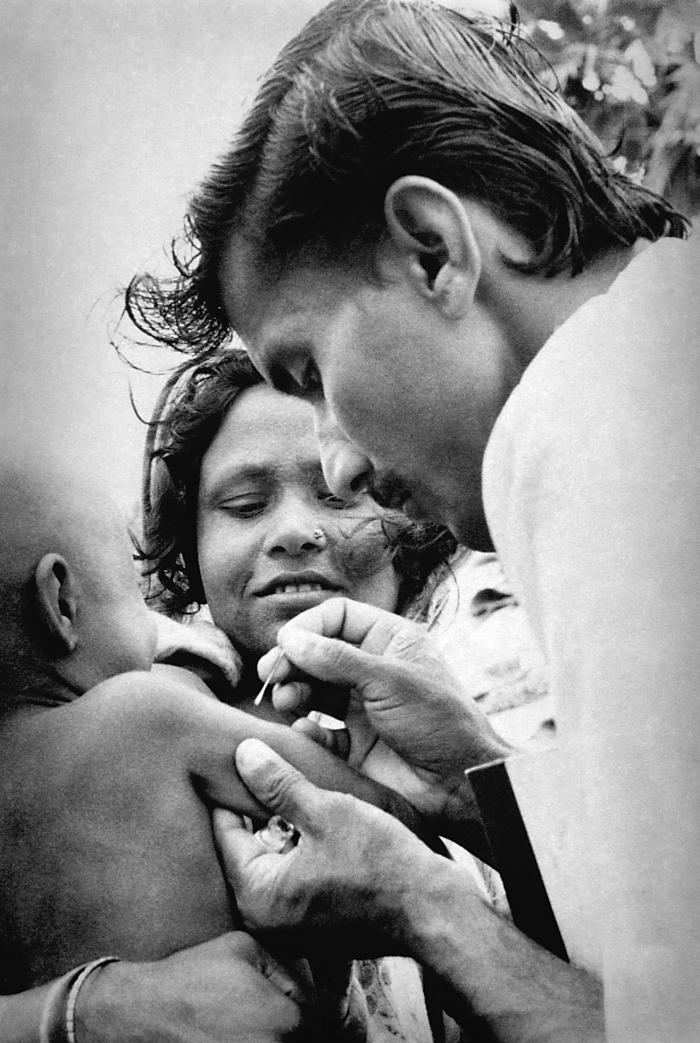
This Bangladesh volunteer smallpox eradication team vaccinator was in the process of administering a vaccination to the right upper arm of a small child, while the child was being held steady in the arms of his mother.Normally, individuals should not get the smallpox vaccine if they are younger than 12 months of age. However, the mantra preached by the eradication team members was 'that there was only one type of person who did not need a vaccination - a dead person'. During non-emergency smallpox scenarios, the Advisory Committee on Immunization Practices (ACIP) advises against non-emergency use of smallpox vaccine in children younger than 18 years of age.